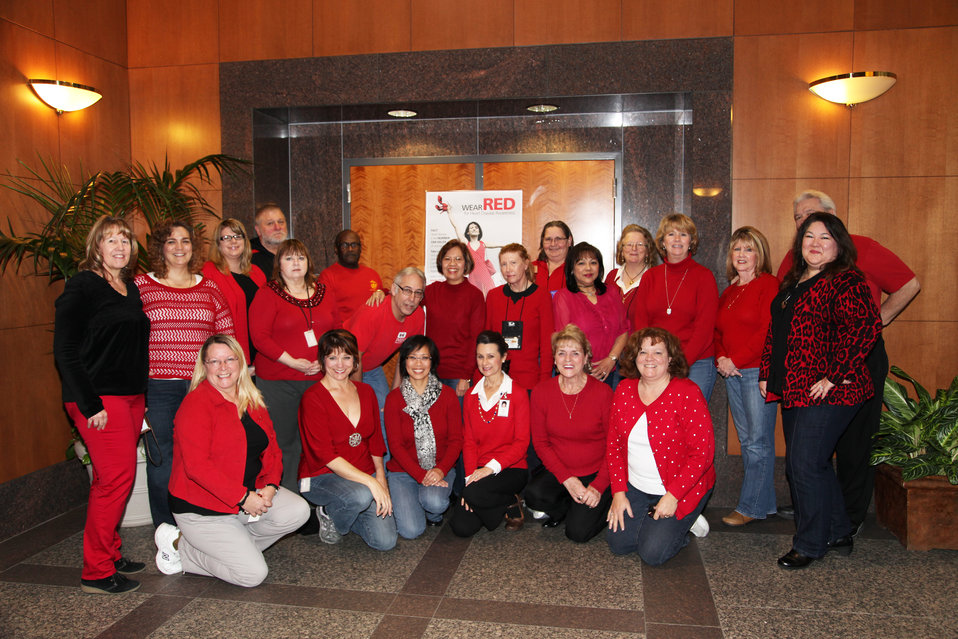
Heart Disease Awareness (National Wear Red Day)

Employees from the U.S. Army Corps of Engineers Sacramento District show their support for women’s heart health by wearing red during National Wear Red Day, Feb. 1, 2013. Heart disease is the number one killer of women—causing more deaths among women than all forms of cancer according to the American Heart Association. Wear Red Day is part of a national awareness campaign started by the U.S. Department of Health and Human Services, and the National Heart Lung and Blood Institute in 2003 to raise awareness and take action to reduce the risk of cardiovascular disease among American women. (From left to right) Back: Roxanne Bump, LaDonna Hulcy, Melanie Prescott, Robert Ennis, Sandra Jaenicke, Larry Wright, Jim Henriksen, Bella Almaraz, Paricia Rahmat, Kathy Kroeger, Linda Reyes, Linda Shannon, Jennifer Olsson, Kathy Burnett, Steve Freitas, Pam Vandre. Front: Sue Fox, Lynne Erickson, Monina Isaac, Jan Luoma, Helen Maxwell, Holly Conrad.